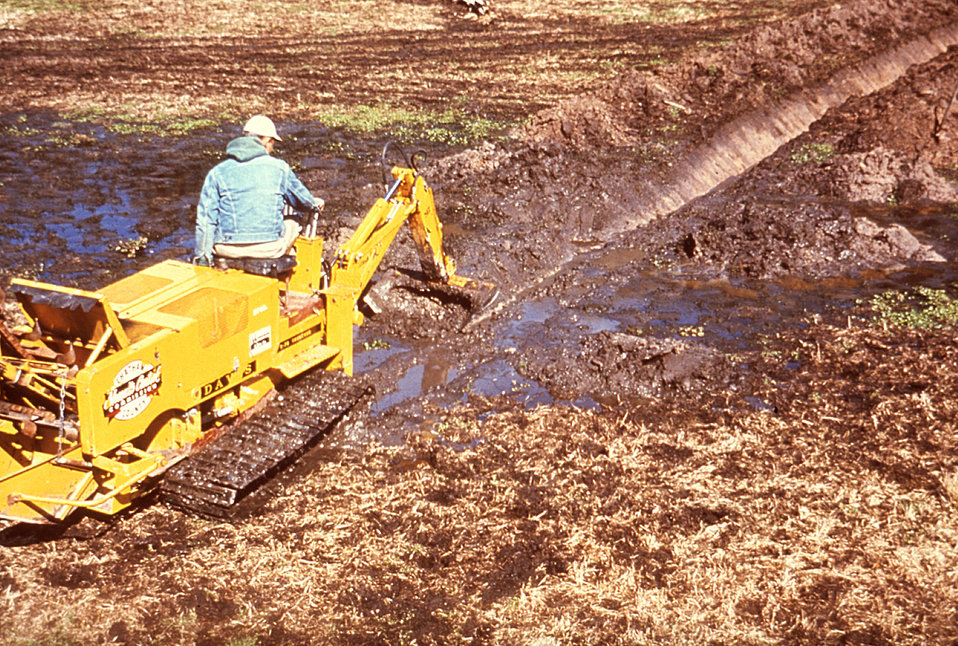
Using a gasoline-powered back hoe outfitted with a triangular bucket especially designed for pasture-type digging, this machine operator was excavating a ditch in a Chatham County, Georgia field, which happens to be the habitat of a population of Psorophora columbiae mosquitoes.